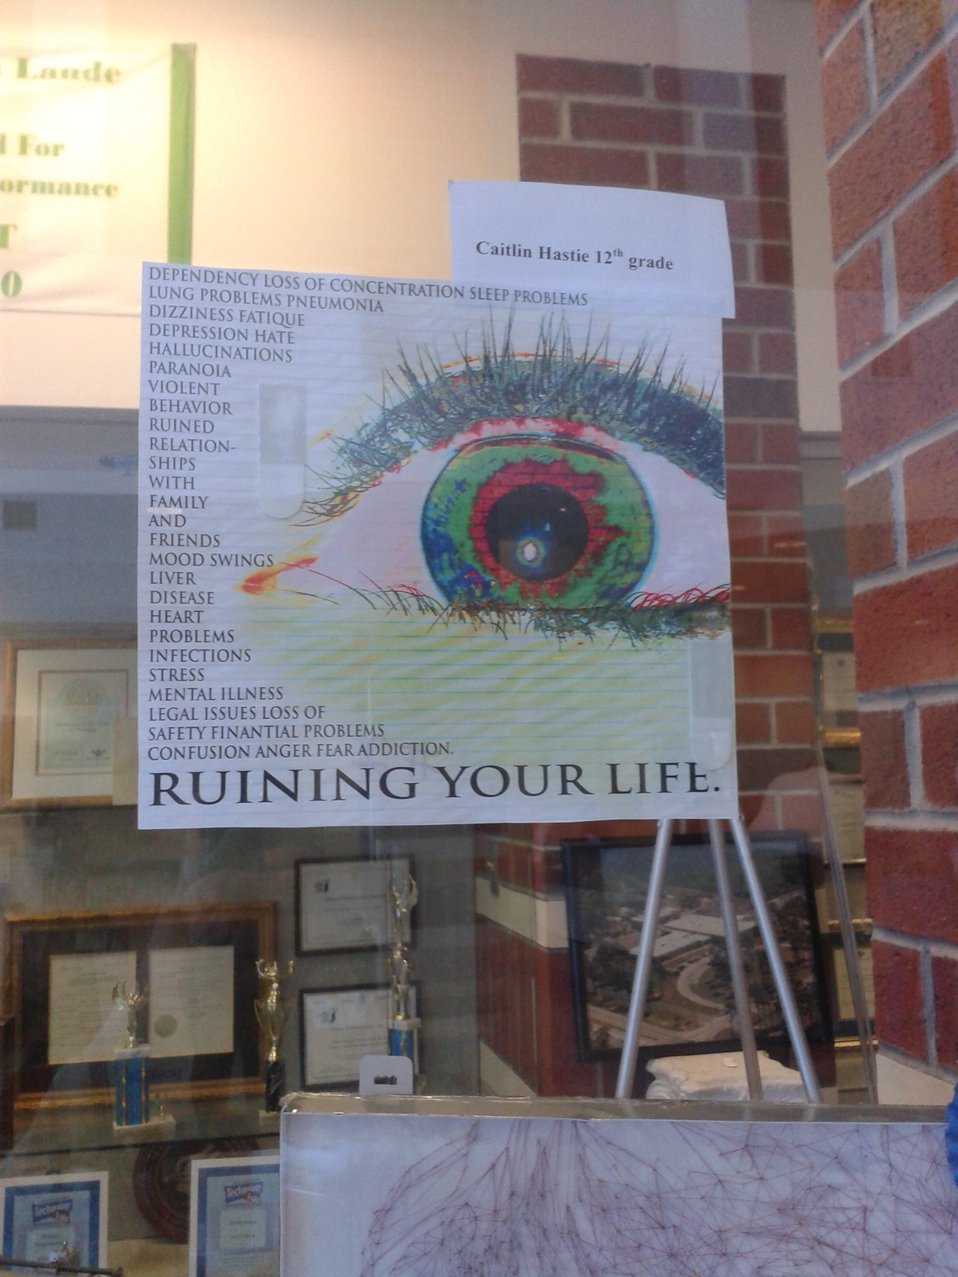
South Carolina's NDFW 2013

Horry County Schools, S.C., Academy for the Arts and Science, and Technology holds NDFW 2013 Event.